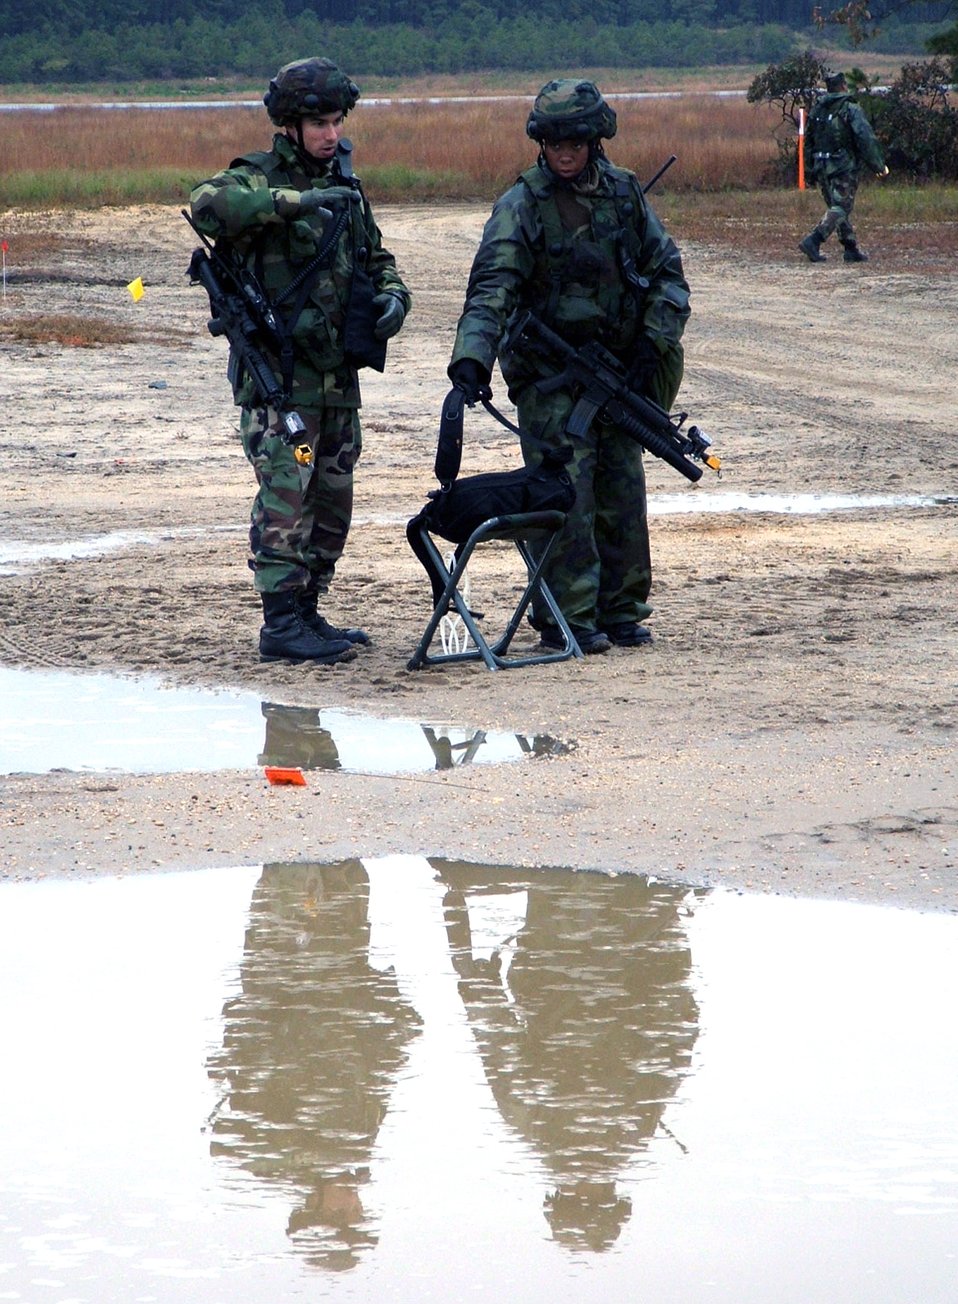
Eagle Flag

NAVAL AIR ENGINEERING STATION LAKEHURST, N.J. (AFPN) -- Capt. Kevin Walker and Senior Airman Winter Gibson figure out how to set up force protection measures at their camp here. The Airmen, from the 613th Security Forces Squadron at Andersen Air Force Base, Guam, deployed here in support of exercise Eagle Flag 06-1, which began Oct. 21. )